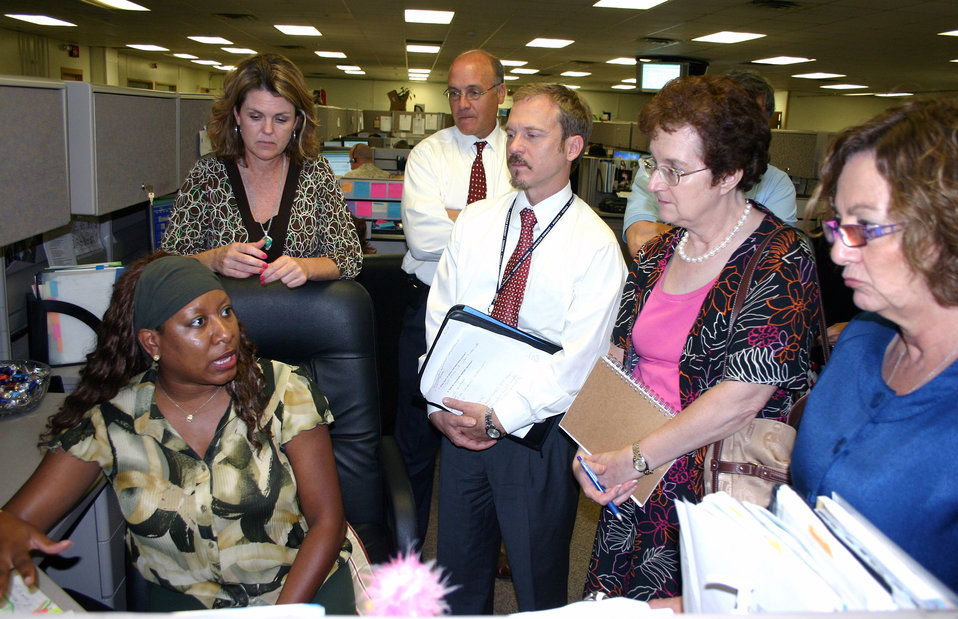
State Department learns customer service from AFPC

Tonya Harris (sitting) briefs visitors from the U.S. Department of State's Bureau of Human Resources on the various Web-based technologies employed at the Air Force Personnel Center's 24-hour Air Force Contact Center Aug. 25 at Randolph Air Force Base, Texas. The seven-member team visited AFPC recently to learn the many initiatives that have been undertaken to deliver personnel services to Air Force customers worldwide.